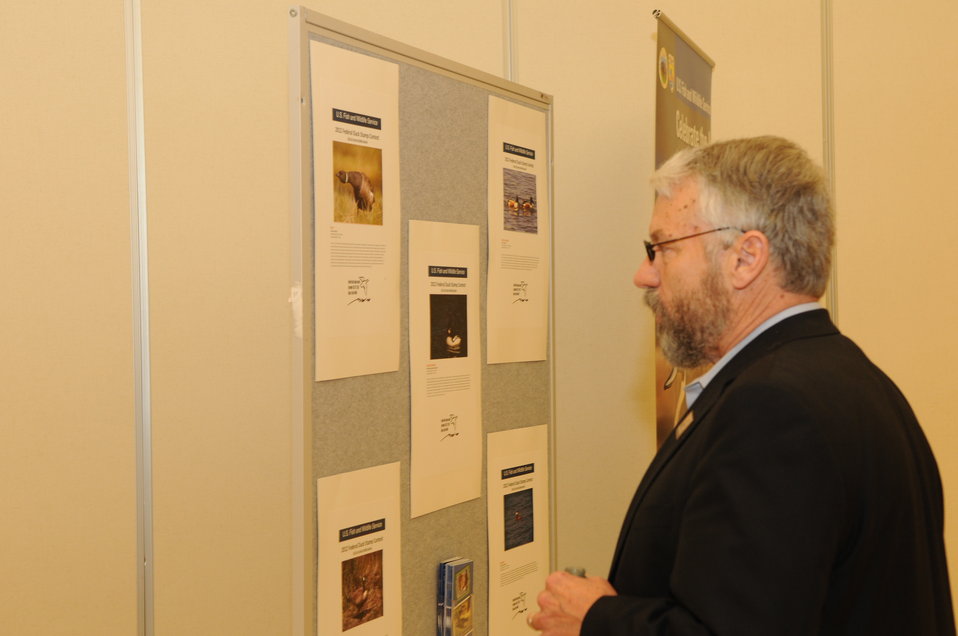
Rowan Gould checks out the exhibits

The U.S. Fish & Wildlife Service sponsored the 2012 Federal Duck Stamp Art Contest September 28 and 29 in Ogden, Utah, at Weber State University. A panel of five judges was responsible for choosing the art work used to design the 2013-2014 Migratory Bird Hunting and Conservation Stamp.